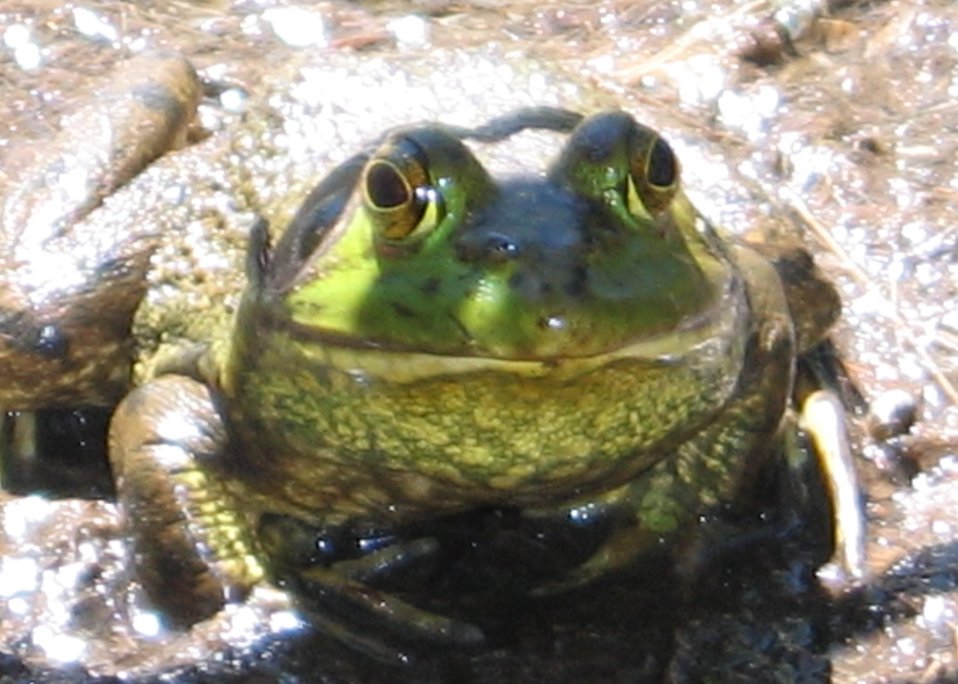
Frog